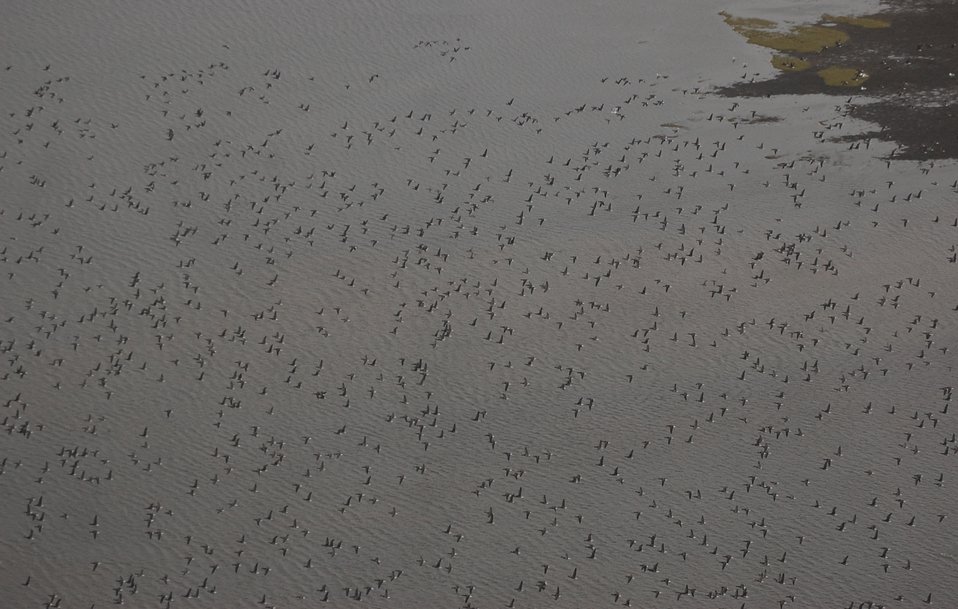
Brant at Izembek Lagoon

Izembek National Wildlife Refuge